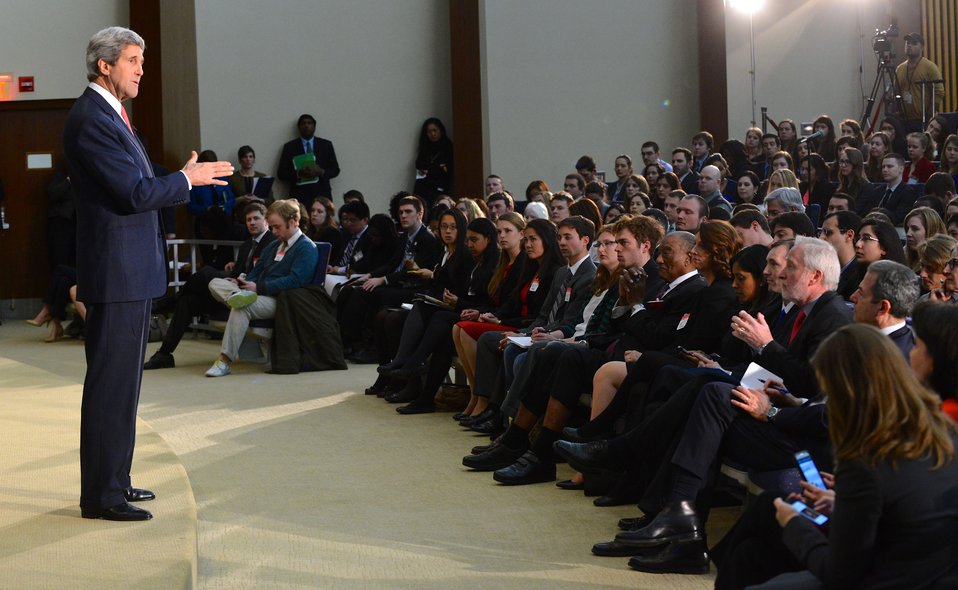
Secretary Kerry Hosts a Town Hall on ‘Making Foreign Policy Less Foreign’

U.S. Secretary of State John Kerry hosts a Town Hall, moderated by BuzzFeed’s Miriam Elder, on ‘Making Foreign Policy Less Foreign’ with university students from around the country attending Washington-area programs, Congressional interns, and U.S. Department of State interns at the Department in Washington, D.C., on March 18, 2014.